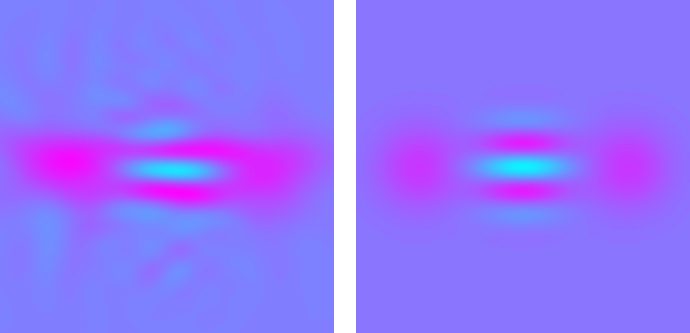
Quantum Cats

These colorized plots of electric field values indicate how closely the NIST 'quantum cats' (left) compare with theoretical predictions for a cat state (right). The purple spots and alternating blue contrast regions in the center of the images indicate the light is in the appropriate quantum state.